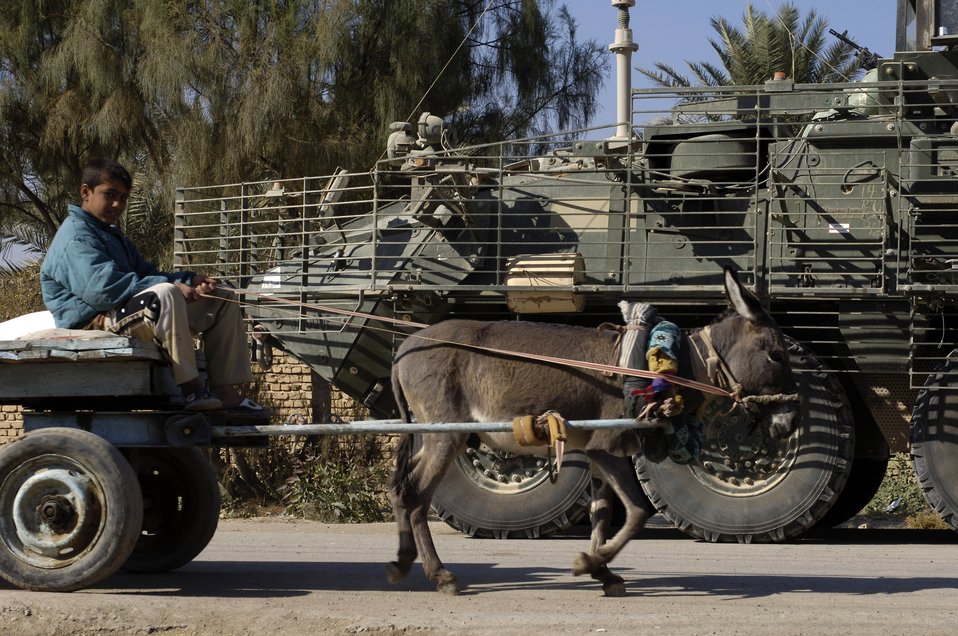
Old meets new

An Iraqi boy drives his donkey cart past an Army Stryker vehicle on patrol in Baqubah, Iraq, Nov. 24.